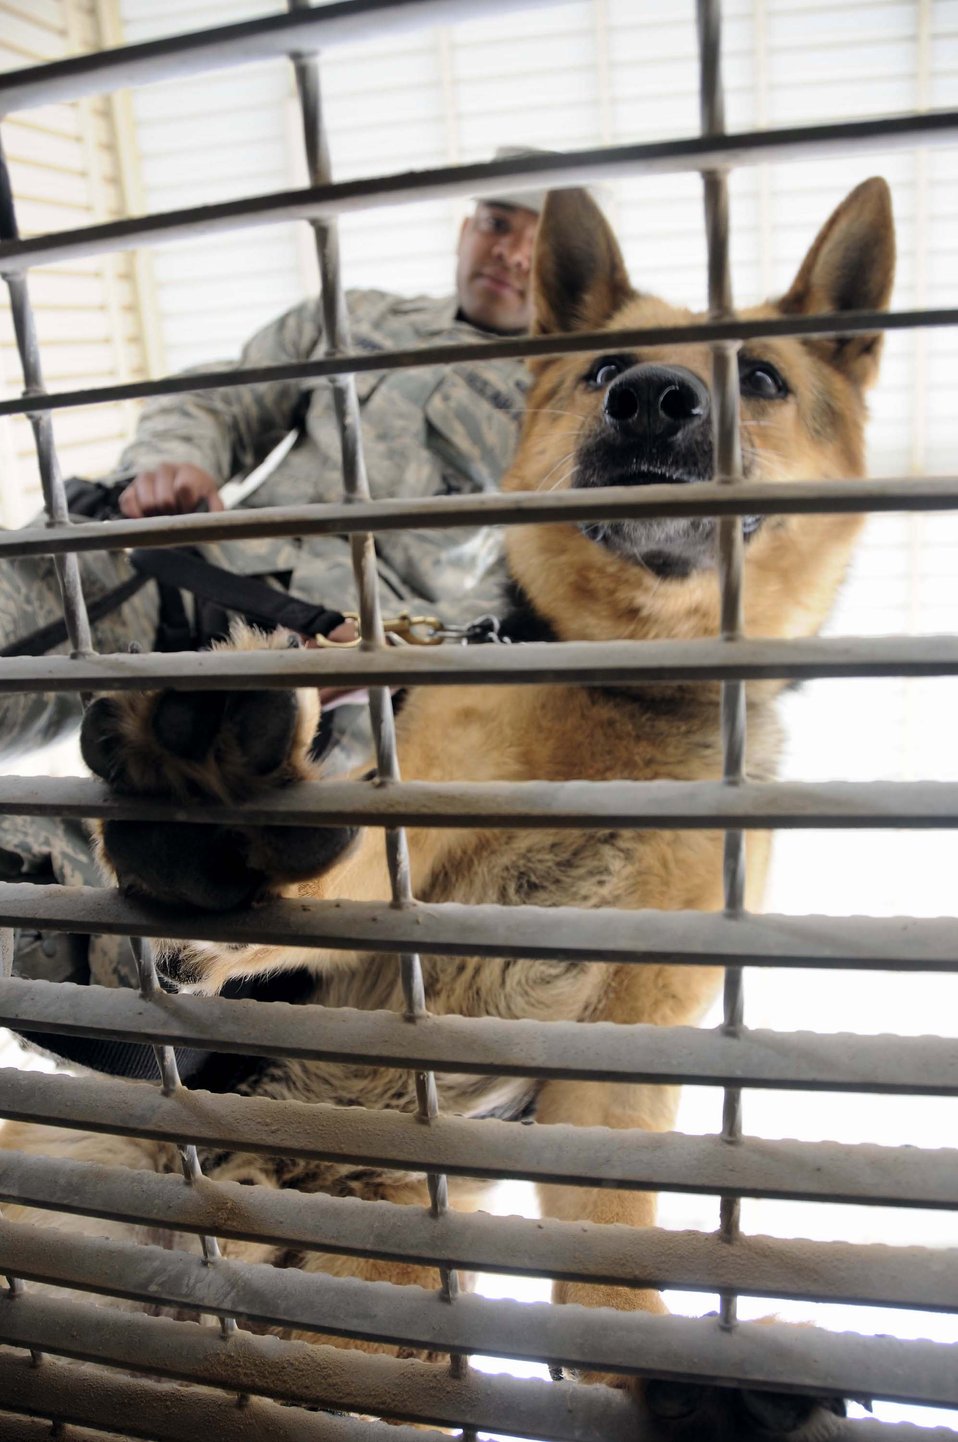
K-9 team keeps crime on a leash

Military working dog, Bruno, and his handler, Staff Sgt. Kenneth Williams, look down through the grate covering a search pit while waiting for vehicles to approach March 6 in Southwest Asia. Vehicles entering must be searched before proceeding onto the base.